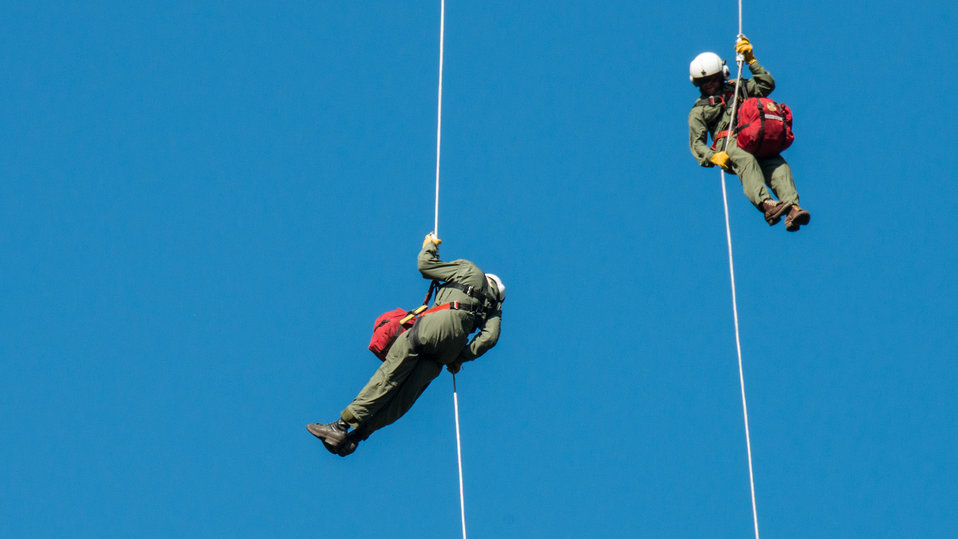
Veteran wildland firefighter rappellers use various techniques to negotiate the wind from the helicopter rotor blades above them, and away from tree branches, beside and below, as they perform a controlled and safe rappel at the U.S. Department of Agriculture (USDA) U.S. Forest Service (USFS) National Helicopter Rappel Program’s Rappel Academy at Salmon Air Base in Salmon, ID on Thursday, May 15, 2014. From May 12, 2014, 72 veteran rappellers from all over the nation, 30 support staff, and three helicopters with flight crews attend the training at Salmon Air Base. Participants will rappel into the Perreau Creek area. The annual training is delivered in accordance with the National Rappel Operations Guide; strengthen leadership, teamwork, and communications within the rappel community, and produces quality aerial delivered firefighters for use in fire and aviation operations. The USDA Forest Service National Helicopter Rappel Program’s primary mission is initial attack. Rappel crews may be utilized for large fire support, all hazard incident operations, and resource management objectives.